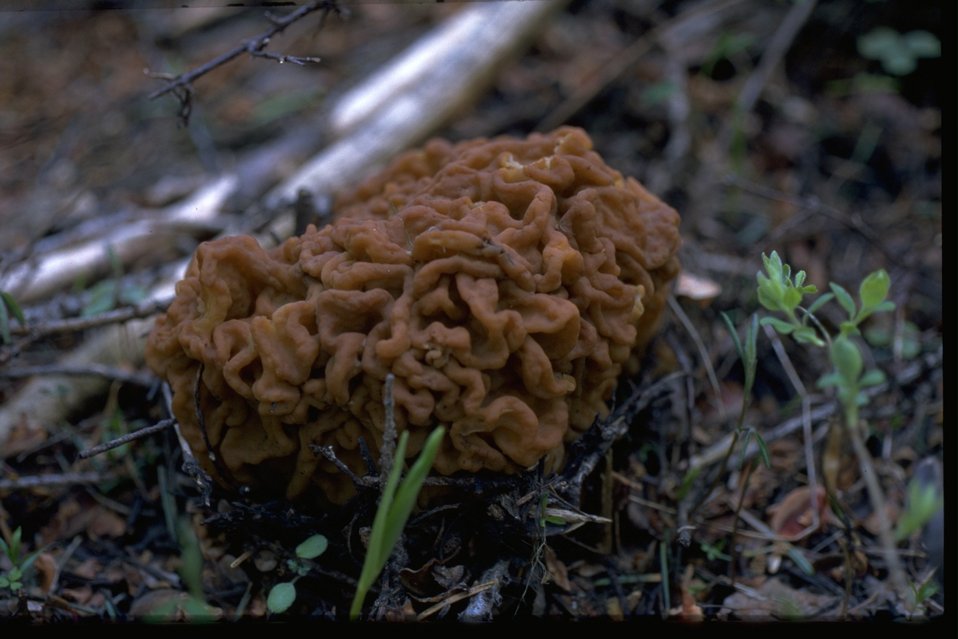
Jenny Creek LSR, a Gyrpmitra esculenta white fir on the north slope of Chinquapin Mountain.